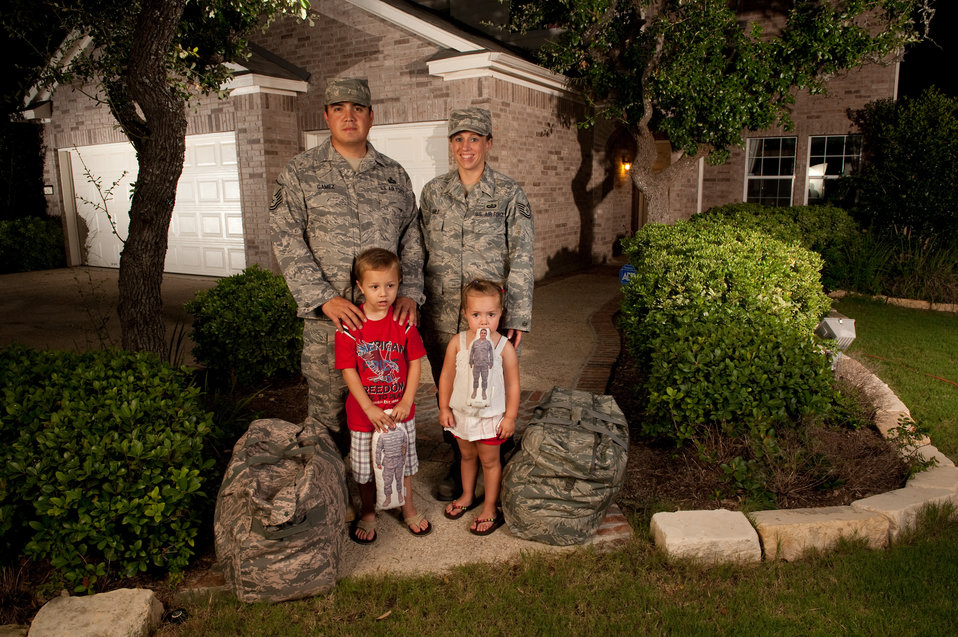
Blogging Couple Deployment preperation

Master Sgt. Rudy Gamez (clockwise from back left), Tech. Sgt Christina Gamez their children Tomas, 4 and Eva, 3 in front of thier home in San Antonio, Texas, on July 13, 2010. Later this year he and his wife will both be deployed and blog about their experiences.